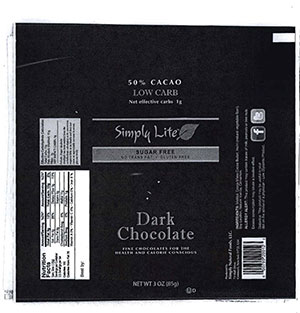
RECALLED – Dark Chocolate Bar

March 17, 2014 – Product Recall – Simply Natural Foods, LLC Issues Allergy Alert for High Levels of Milk Protein in Simply Lite Dark Chocolate Bars.